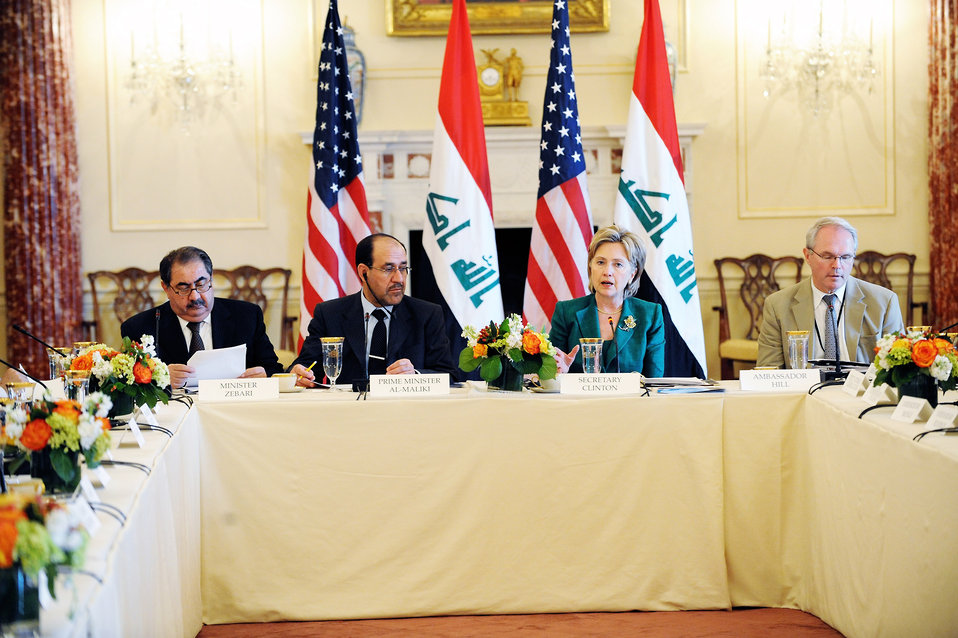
U.S.-Iraq High Coordinating Committee Meeting

U.S. Secretary of State Hillary Rodham Clinton holds U.S.-Iraq High Coordinating Committee Meeting with His Excellency Nouri al-Maliki, Prime Minister of the Republic of Iraq at the U.S. Department of State in Washington, DC July 24, 2009.